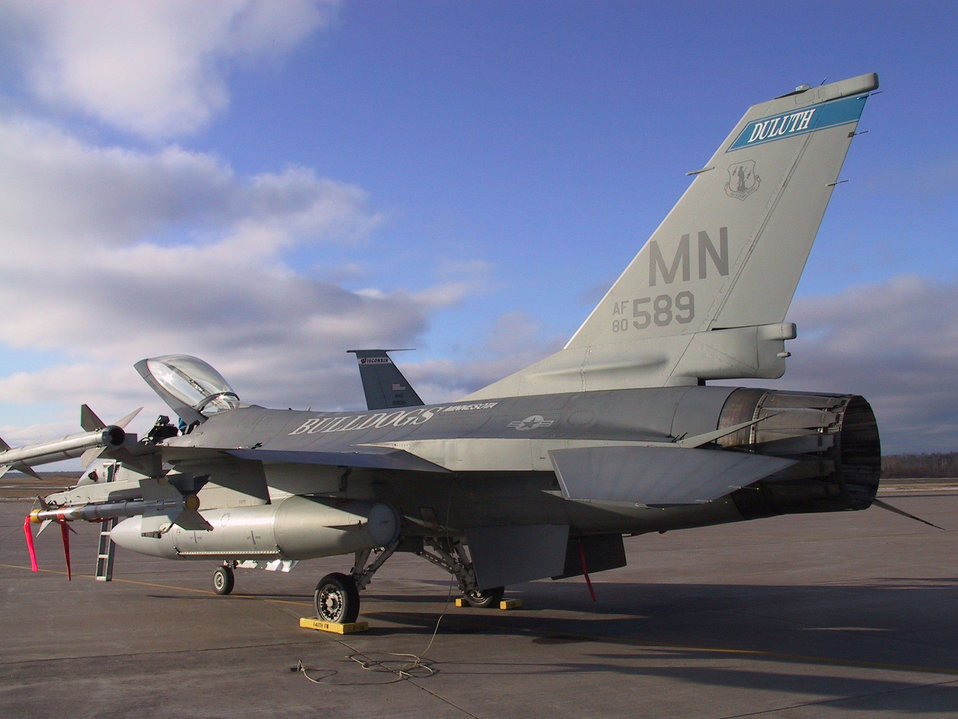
Alert pad

OPERATION NOBLE EAGLE -- An F-16 Fighting Falcon from the Minnesota Air National Guard’s 179th Fighter Squadron Wing stands alert in support of Operation Noble Eagle on Dec. 11. North American Aerospace Defense Command has more than 100 ANG and Air Force Reserve fighters from 26 locations providing homeland defense, with 100 additional fighters backing them up. Additionally, more than 20 ANG and AFRES tankers are airborne every day to keep fighters on station.